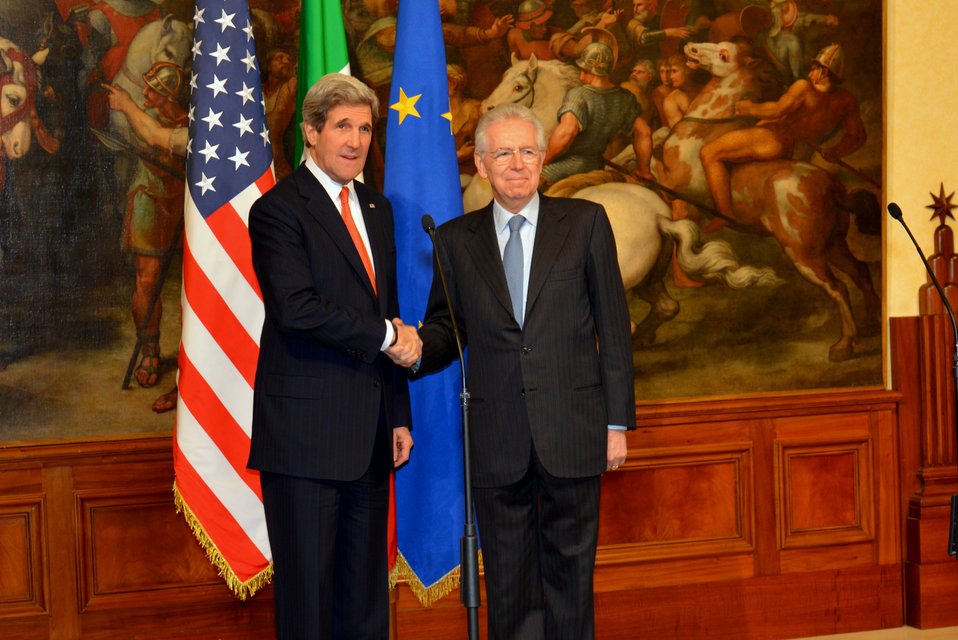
Secretary Kerry Meets With Italian Prime Minister Monti

U.S. Secretary of State John Kerry meets with Italian Prime Minister Mario Monti in Rome, Italy, on February 28, 2013.